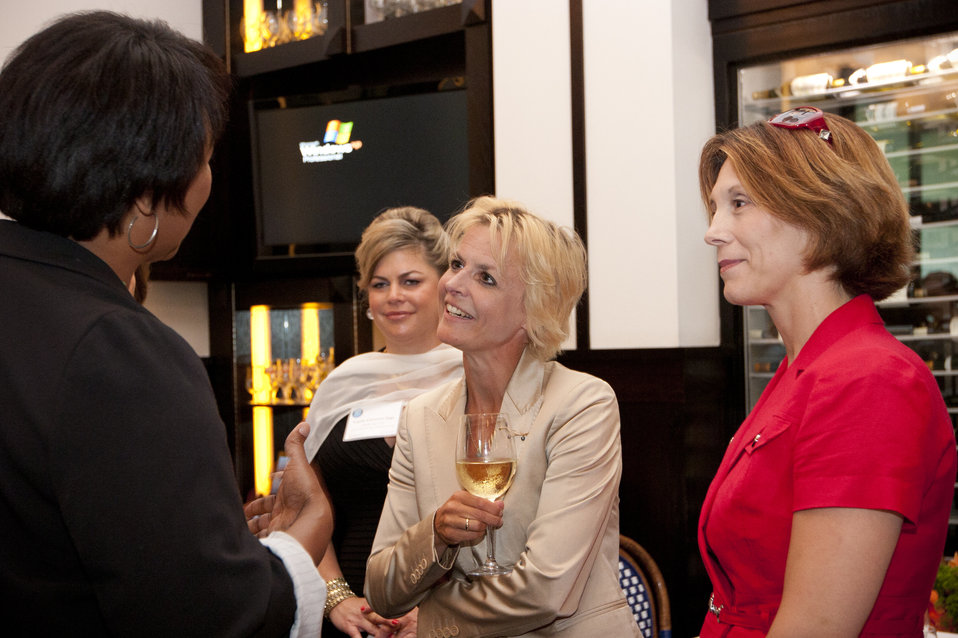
WomenandEnergy 17